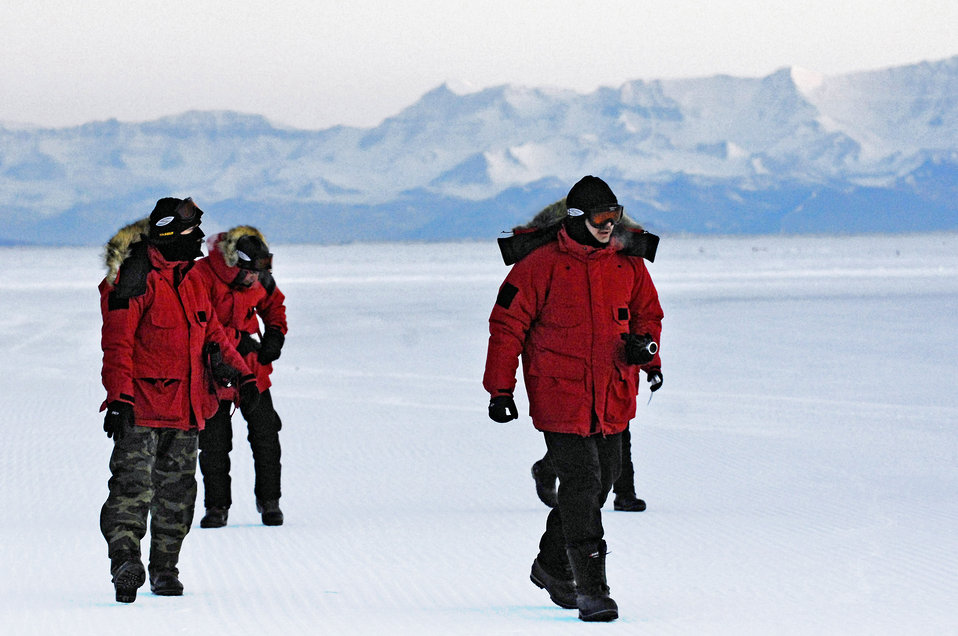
Operation Deep Freeze 2007-08 begins

Maintainers look around Pegasus Runway during the Operation Deep Freeze winter fly-in Aug. 20 in Antarctica. A C-17 Globemaster III and 31 Airmen from McChord Air Force Base, Wash., began the annual winter fly-in augmentation of scientists, support personnel, food and equipment for the U.S. Antarctic Program at McMurdo Station. WinFly is the opening of the first flights to McMurdo Station, which closed for the austral winter in February.